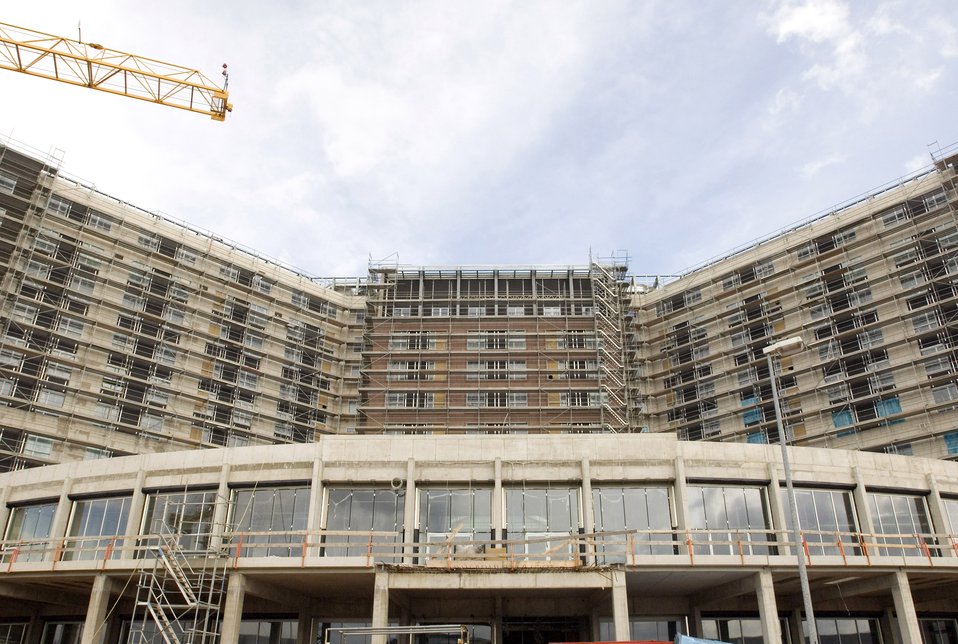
Transformation at Ramstein

The yet unfinished hotel stands tall over the Kaiserslautern Military Community Center's construction site and Ramstein Air Base, Germany, on Tuesday, March 28, 2006. The 350-room billeting is slated to open in September and the shopping mall in early 2007.